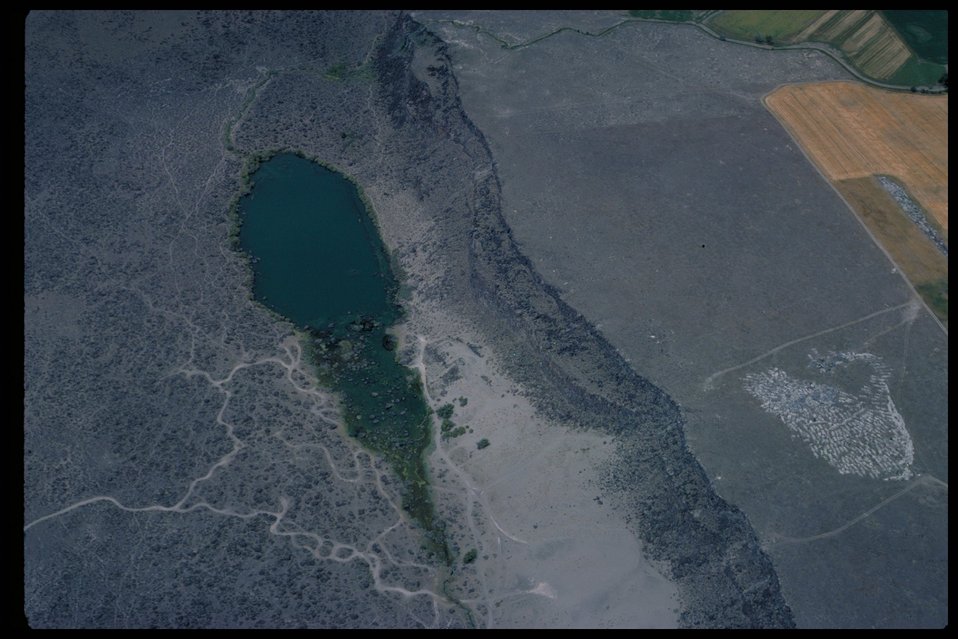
Snake River Birds of Prey Area Halverson Lake Birds of Prey National Conservation Area BOP Owyhee Field Office LSRD Lower Snake River District